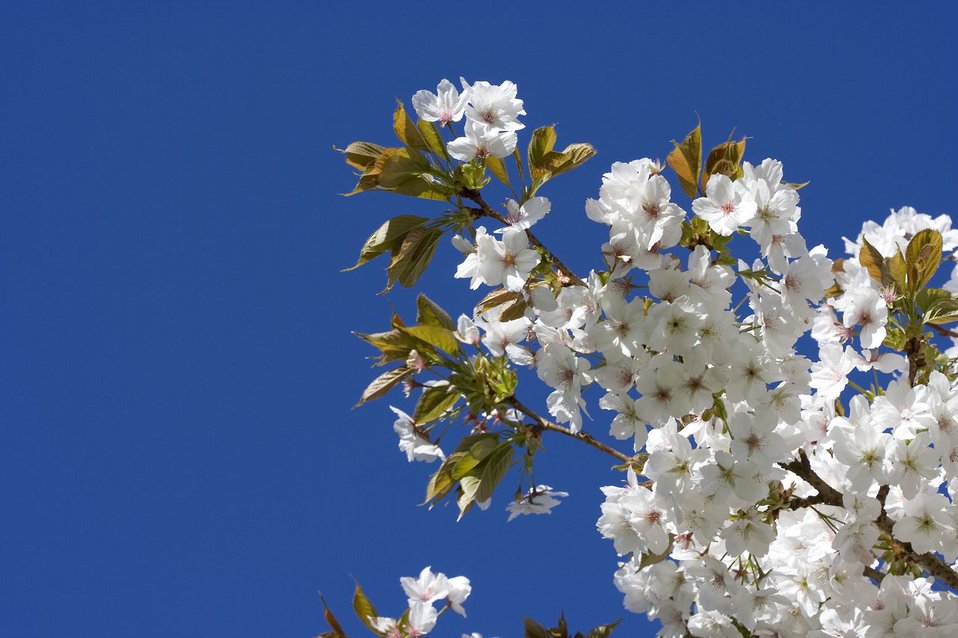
Japanese flowering cherry

White japanese flowering cherry against the blue sky.